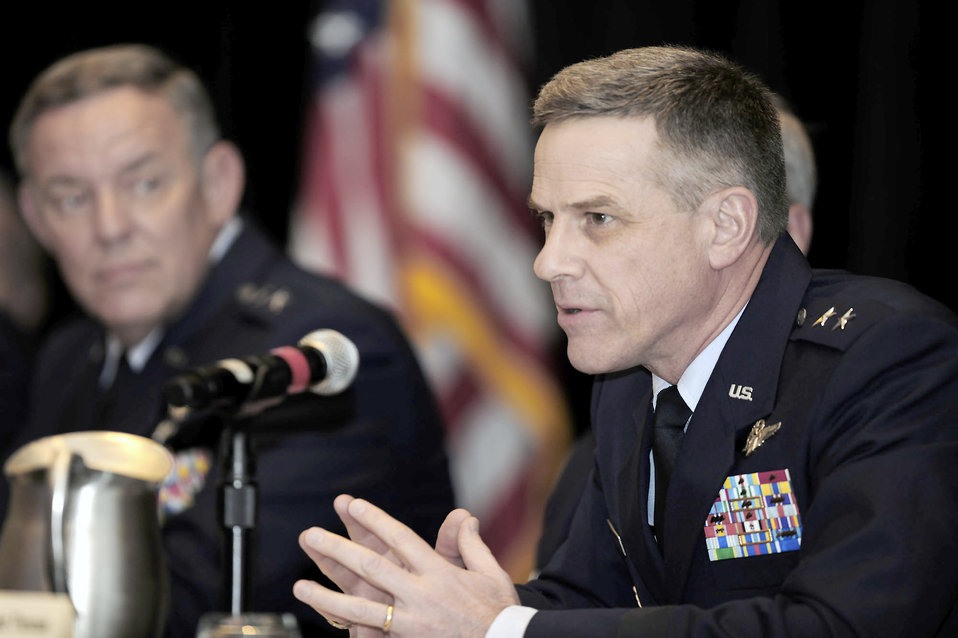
Generals discuss nuclear enterprise at annual conference

Maj. Gen. William Chambers answers questions during the Nuclear Enterprise panel discussion Sept. 13, 2010, during the Air Force Association's Air and Space Conference and Technology Exposition in Oxon Hill, Md. Other panelists were Gen. Roger Brady, United States Air Forces in Europe commander, Maj. Gen. C. Donald Alston, 20th Air Force commander, Maj. Gen. Floyd Carpenter, 8th Air Force commander, and Brig. Gen. Everett Thomas, Air Force Nuclear Weapons Center. General Chambers is assistant chief of staff for Strategic Deterrence and Nuclear Integration.